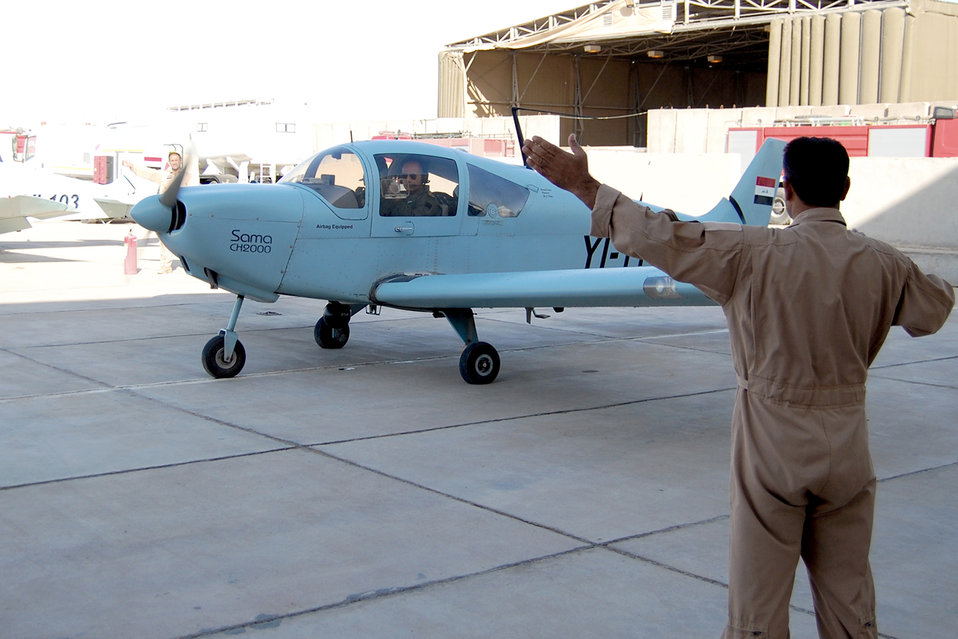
Electronic Systems Center team

Iraqi Brig. Gen. Sami Saeed gives a thumbs-up from inside a 70th Squadron CH 2000 reconnaissance airplane June 27, 2010, at Contingency Operating Base Basra, Iraq, before departing on a joint mission with U.S. forces. The Electronic Systems Center is completing an information technology infrastructure project that will significantly improve communication and connectivity for the Iraqi Air Force.